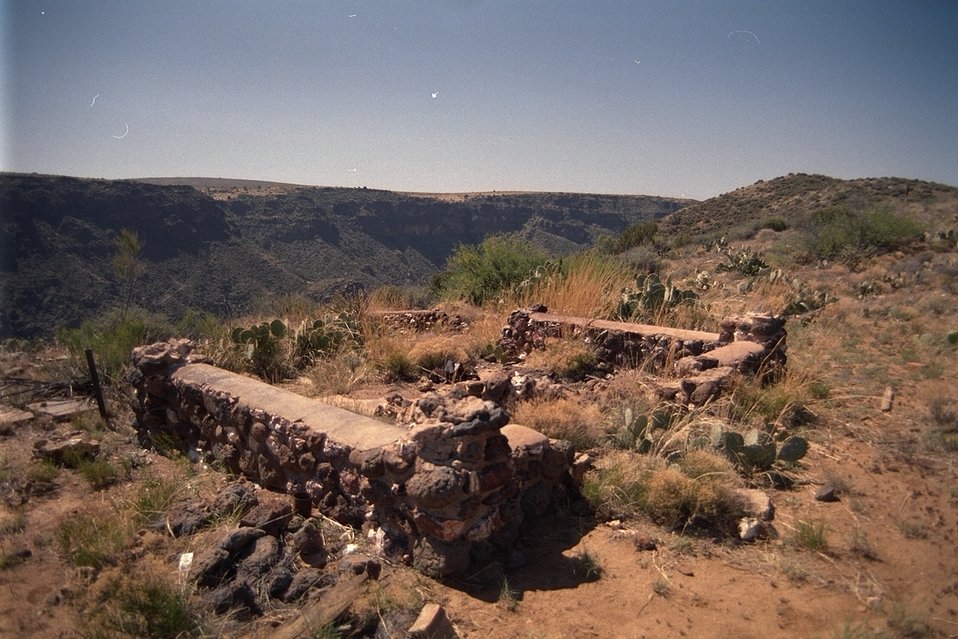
A photograph taken at the Richinbar Mine site in the Agua Fria National Monument.